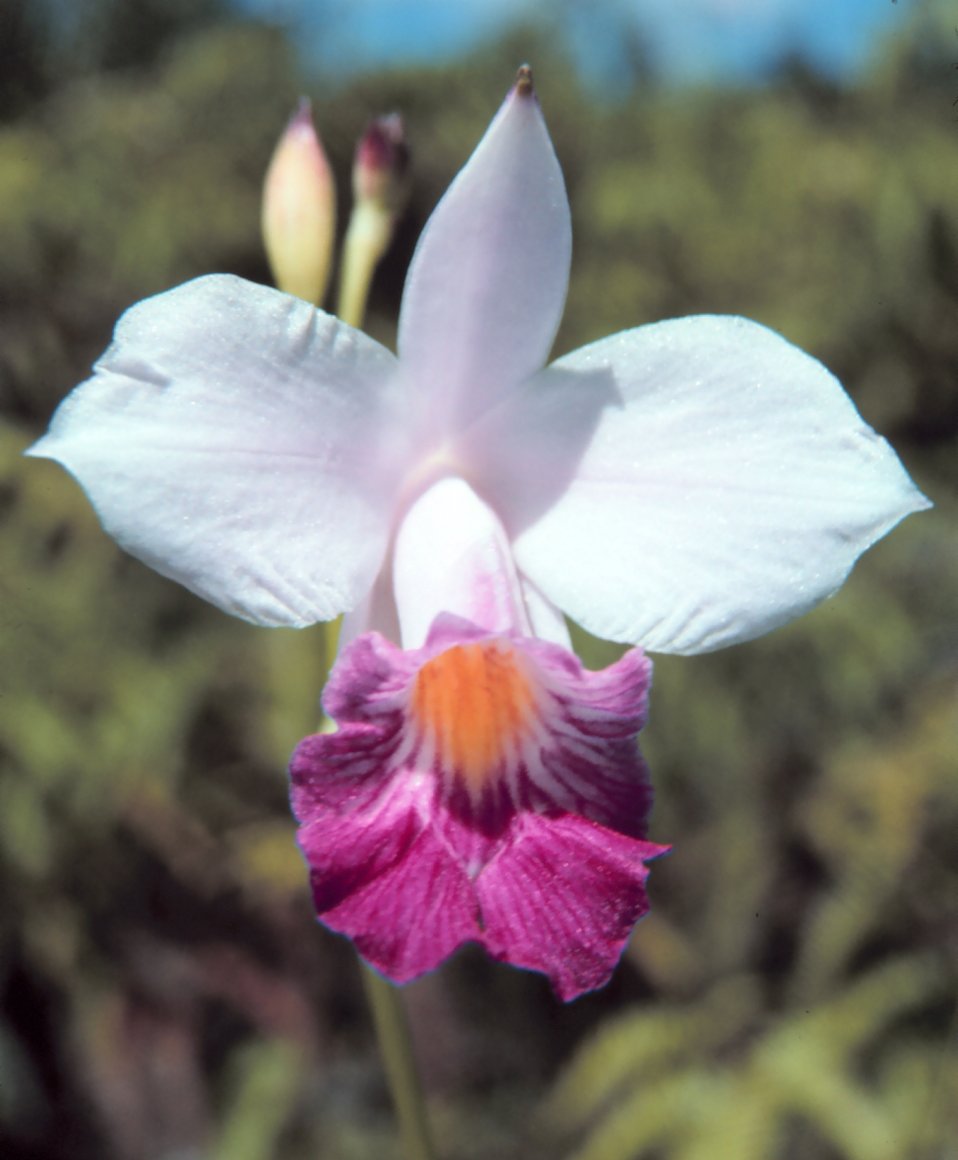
A Hawaiian orchid